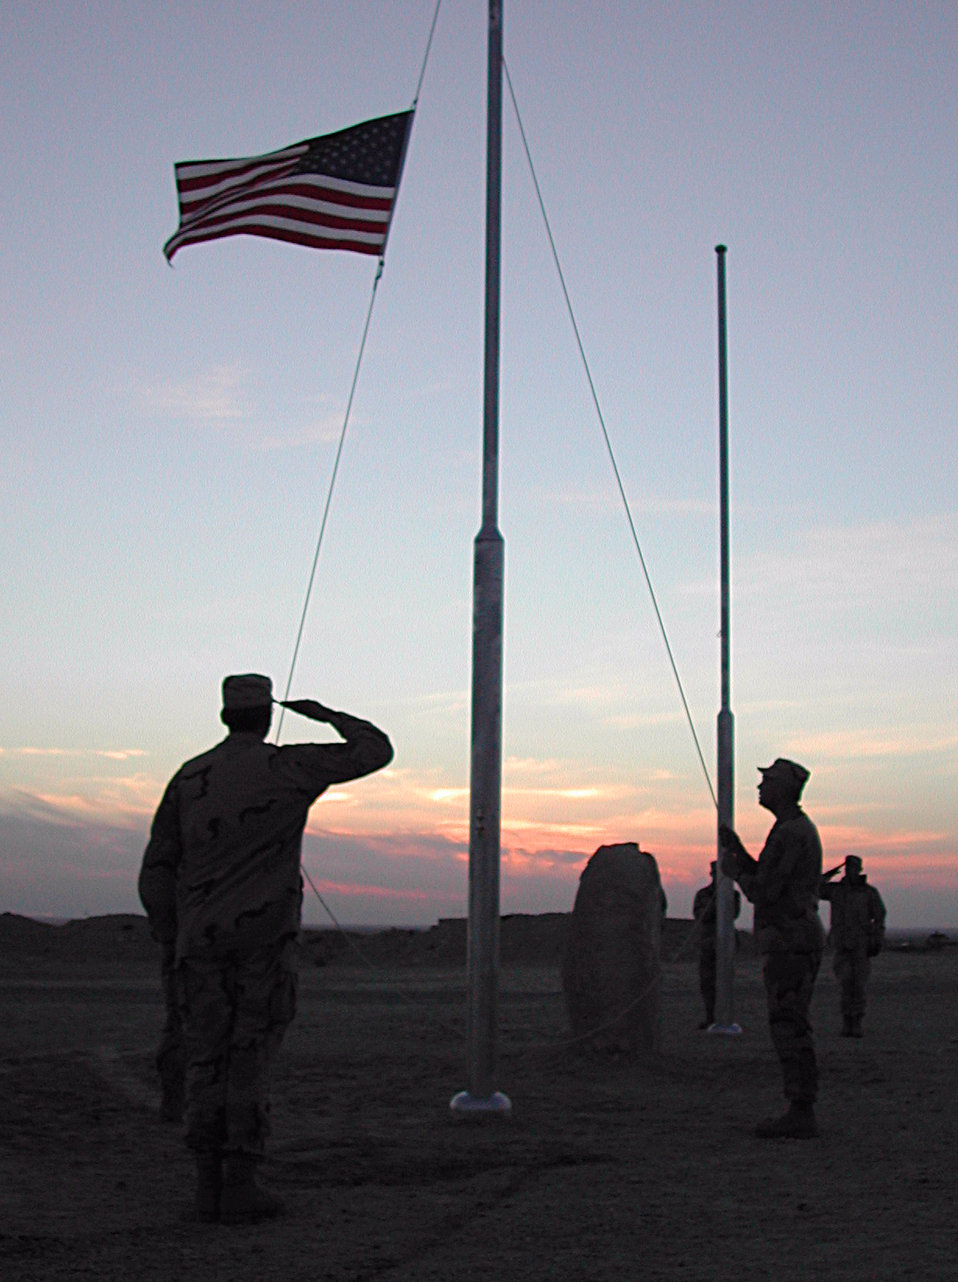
Retreat

SOUTHWEST ASIA -- Senior Master Sgt. Barry Luttrell (foreground) salutes as Chief Master Sgt. Vance Clarke lowers the American flag at an undisclosed location. Sergeant Luttrell and Chief Clarke are assigned to the 386th Air Expeditionary Wing.